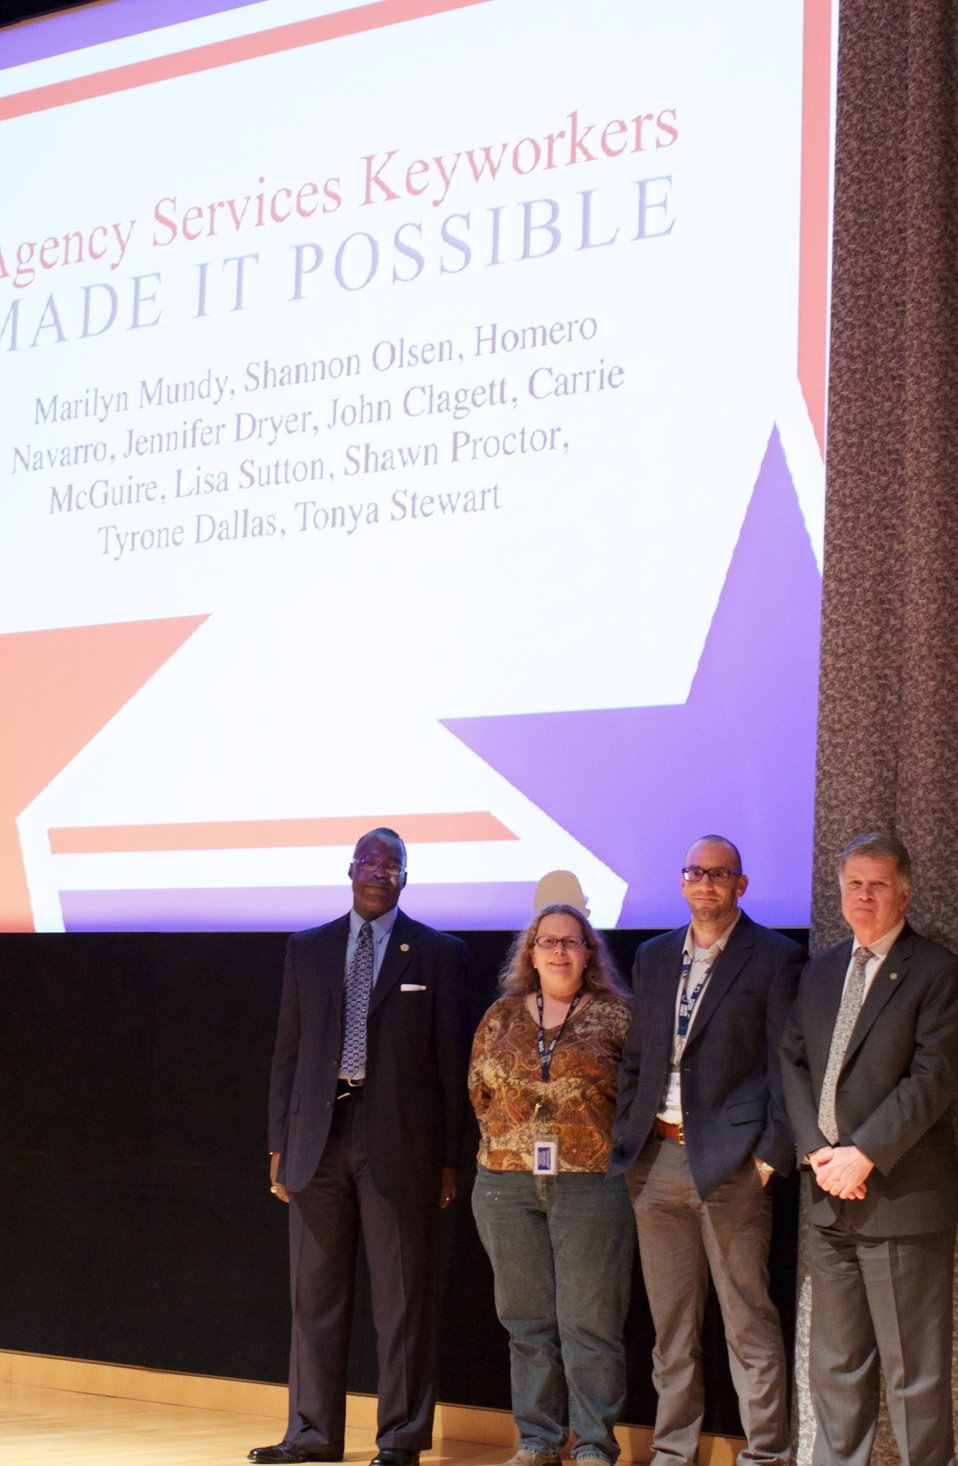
CFC Recognition Event